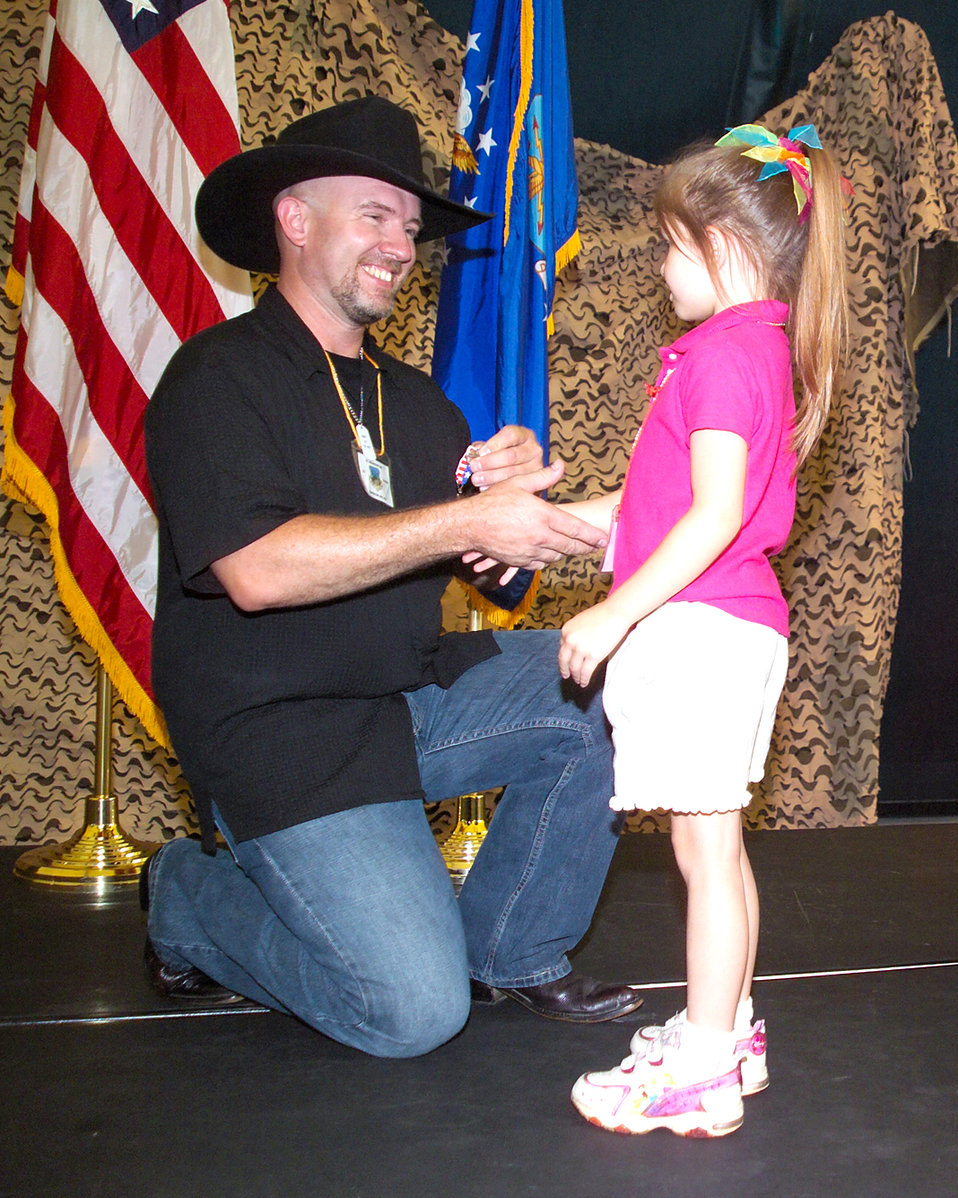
Warrior children

HANSCOM AIR FORCE BASE, Mass. -- Country western singer Jeff Wade Clark presents Haley Hawes, 5, with a Homefront Hero Medal during Hanscom Warrior, Junior Warrior Day here. The July 15 event honored children of deployed servicemembers and those recently deployed. More than 125 children participated in the event and 40 families received Homefront Hero Medals.